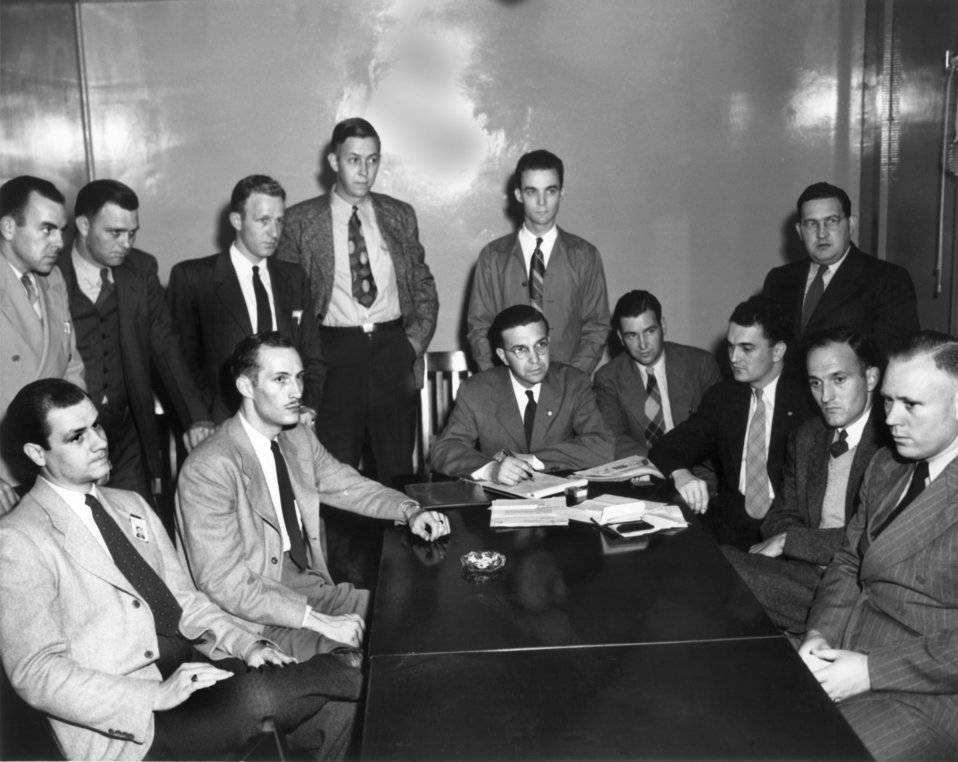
Jr. Chamber of Commerce Oak Ridge

Pro 554 DOE photo by Ed Westcott 5/11/45 Oak Ridge Tennessee